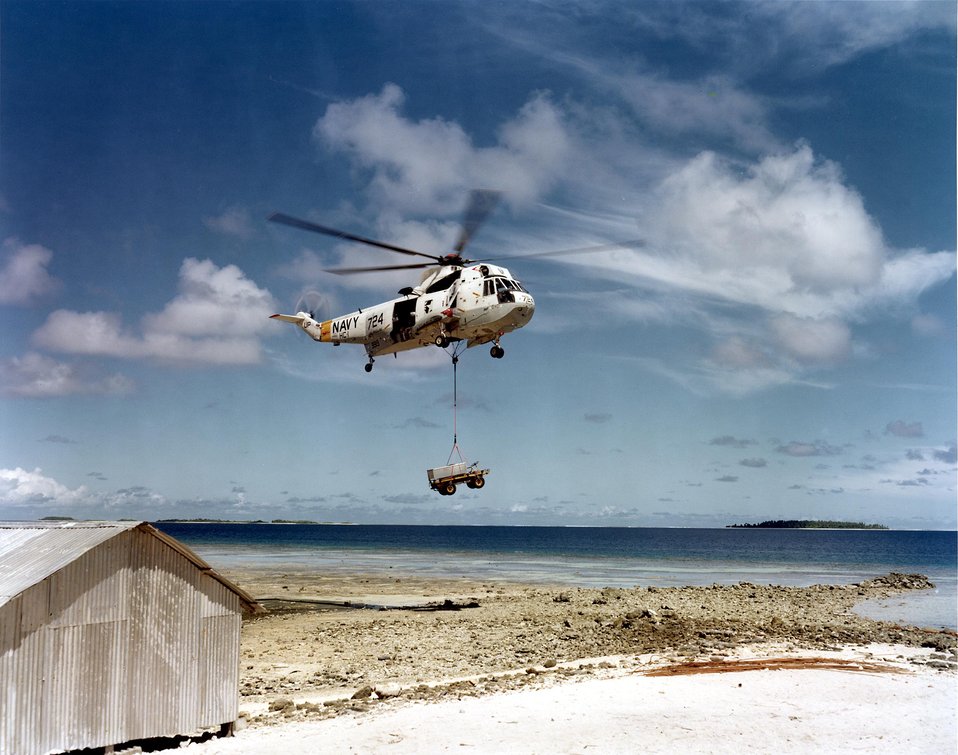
Brunswick Nuclear Plant site aerial view of the plant nearing completion.